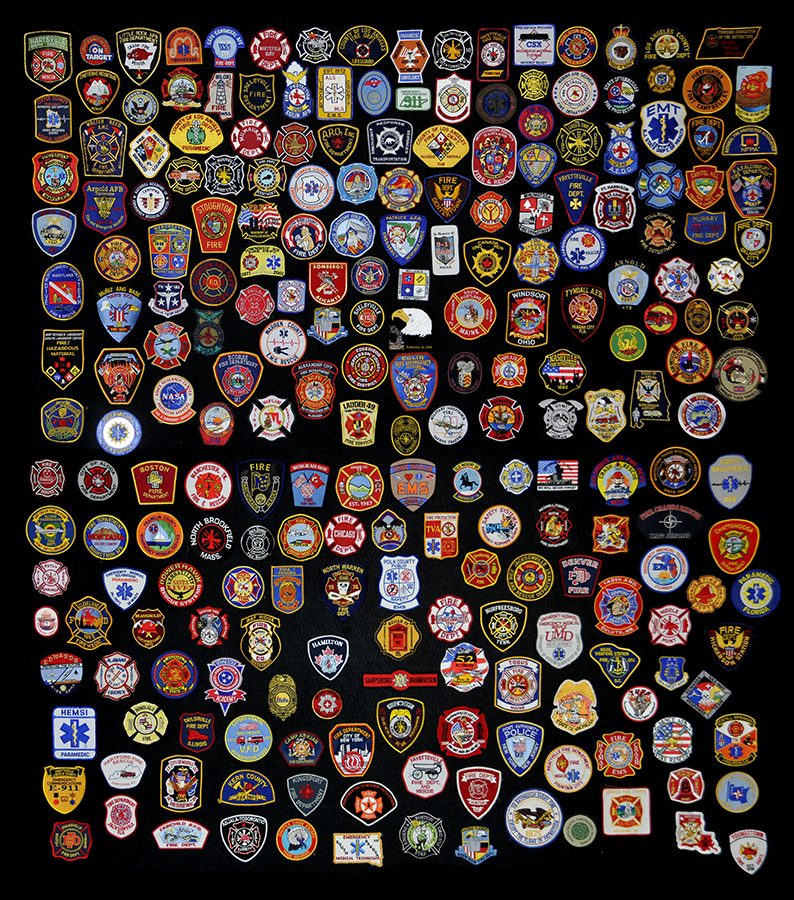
Patches for a little hero

Arnold Engineering Development Center fire department personnel put their crew patches together on a black background for a high resolution photograph used to make a poster to provide moral support to Mark Kelly Olson, a 10-year-old boy battling cancer at Vanderbilt Medical Center in Nashville, Tenn.